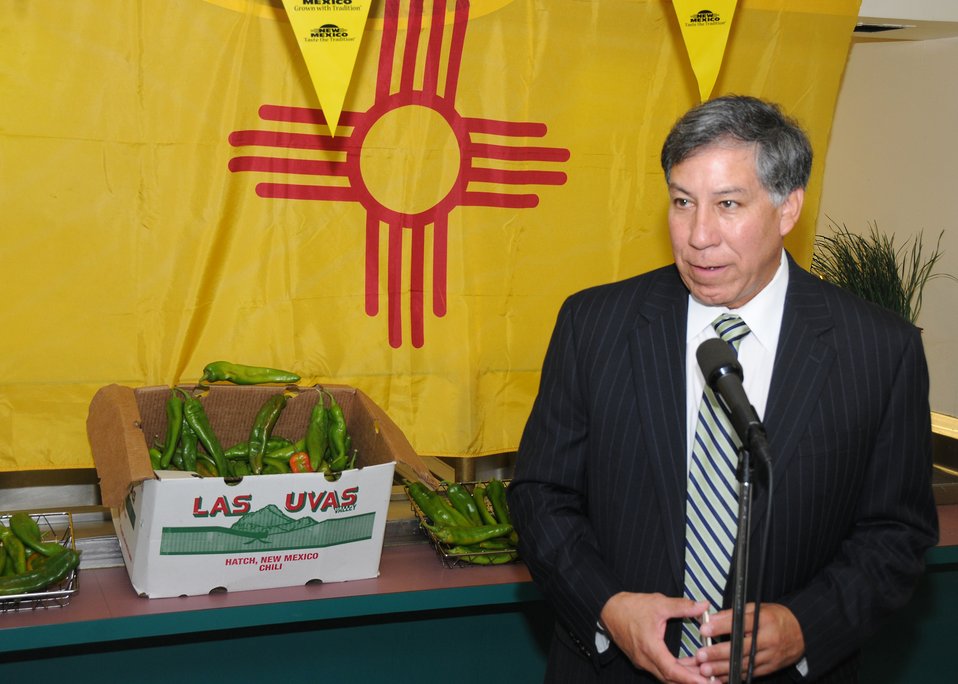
Agriculture Under Secretary for Marketing and Regulatory Programs (MRP) Edward Avalos announced that September is the month to celebrate New Mexico Green Chiles at the U. S. Department of Agriculture (USDA) in the south building cafeteria on Thursday, Sep. 2, 2010. Every Tuesday and Thursday throughout the month there will be menu items featuring New Mexico Green Chiles at USDA cafeterias. This will be an opportunity to sample the many delicious foods of New Mexico such as; green chile stew, green chile enchiladas, chile rellenos, breakfast burritos, pizza, and cheeseburgers. USDA photo 10di1486-16.